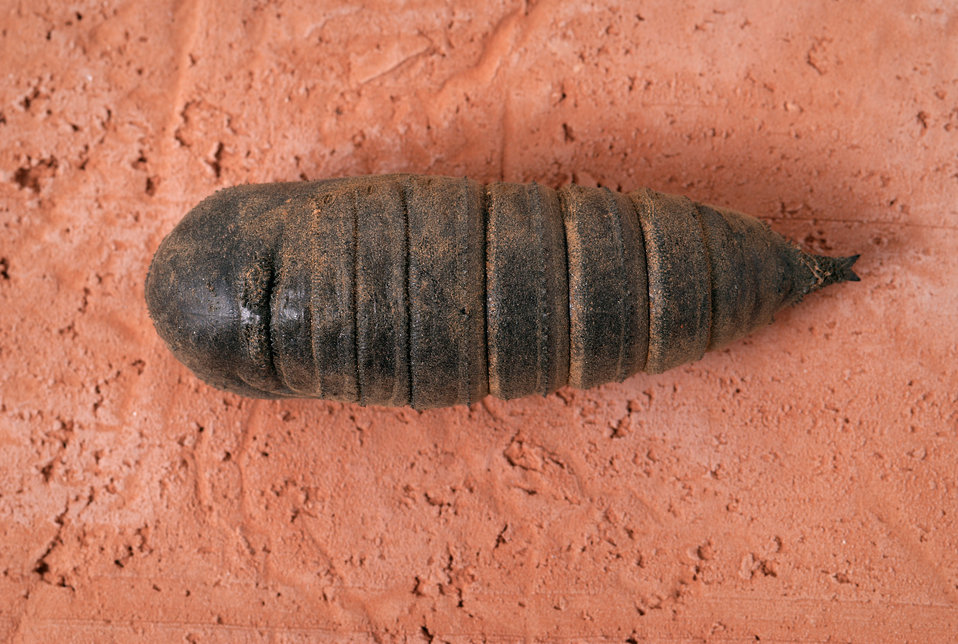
This 2008 image depicts a ventral view, i.e., from below, of a Regal Moth, Citheronia regalis pupa.